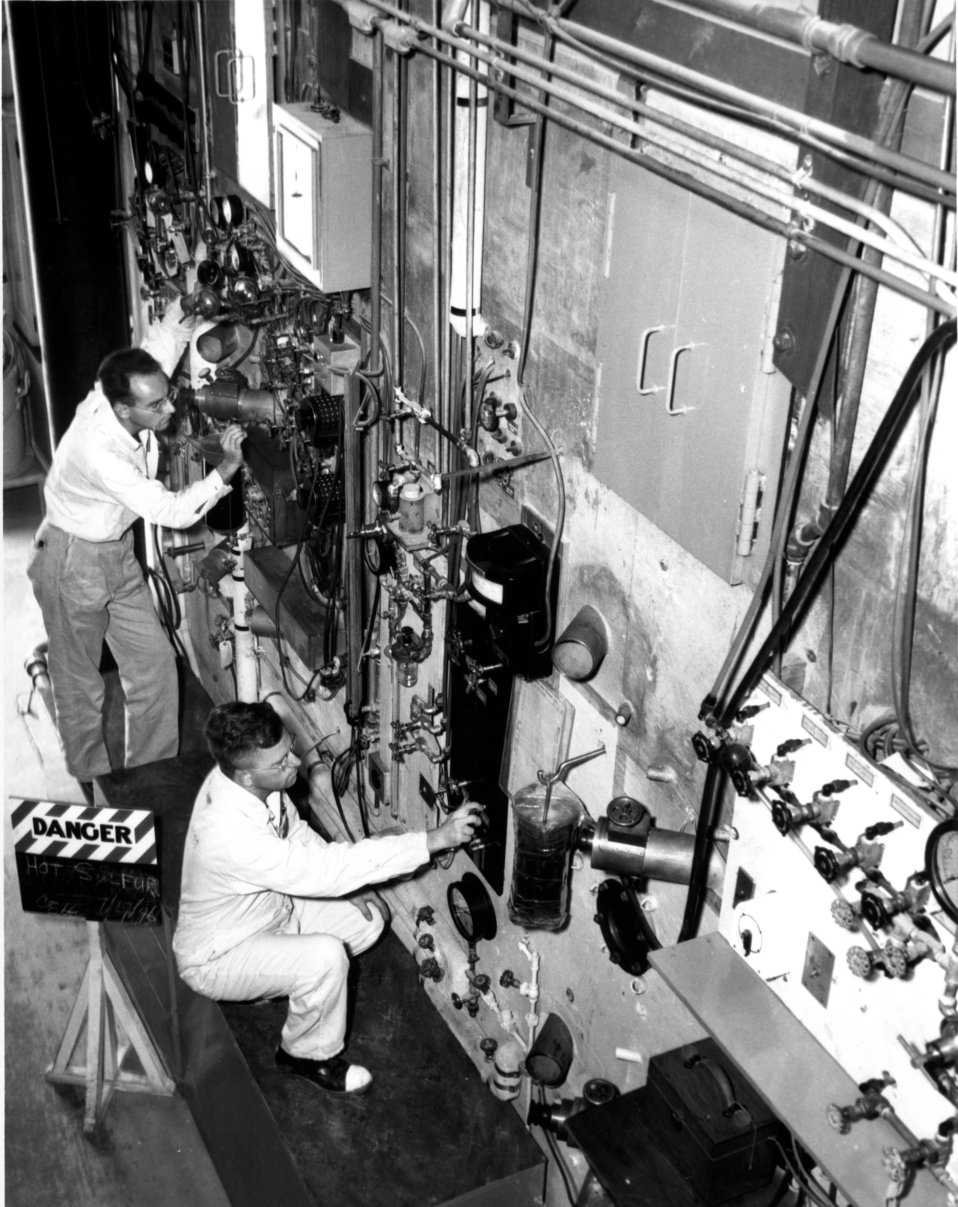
X-10 at Oak Ridge